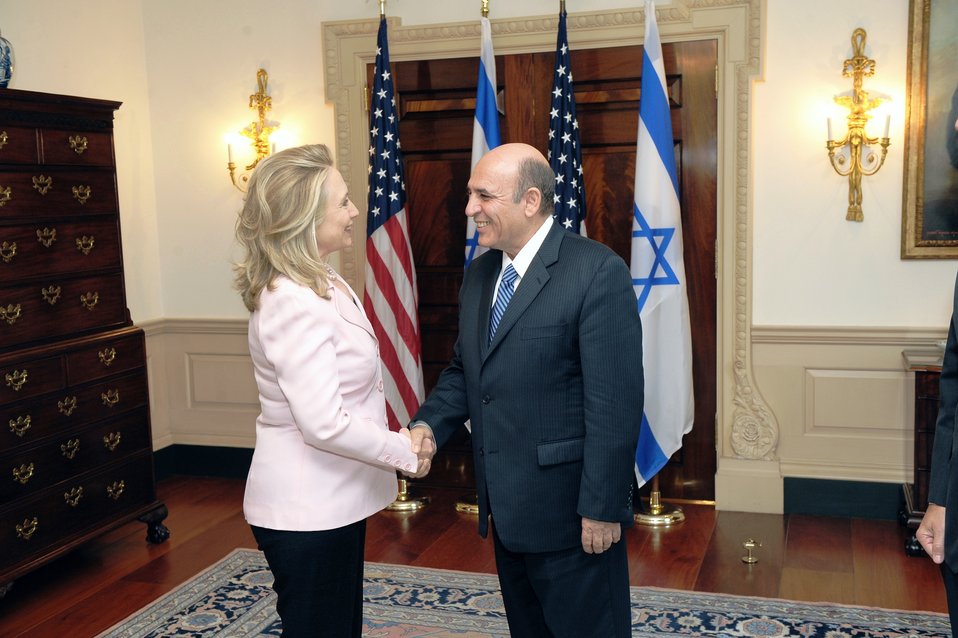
Secretary Clinton Meets With Israeli Deputy Prime Minister Mofaz

U.S. Secretary of State Hillary Rodham Clinton meets with Israeli Deputy Prime Minister Shaul Mofaz at the U.S. Department of State in Washington, D.C., on June 20, 2012.